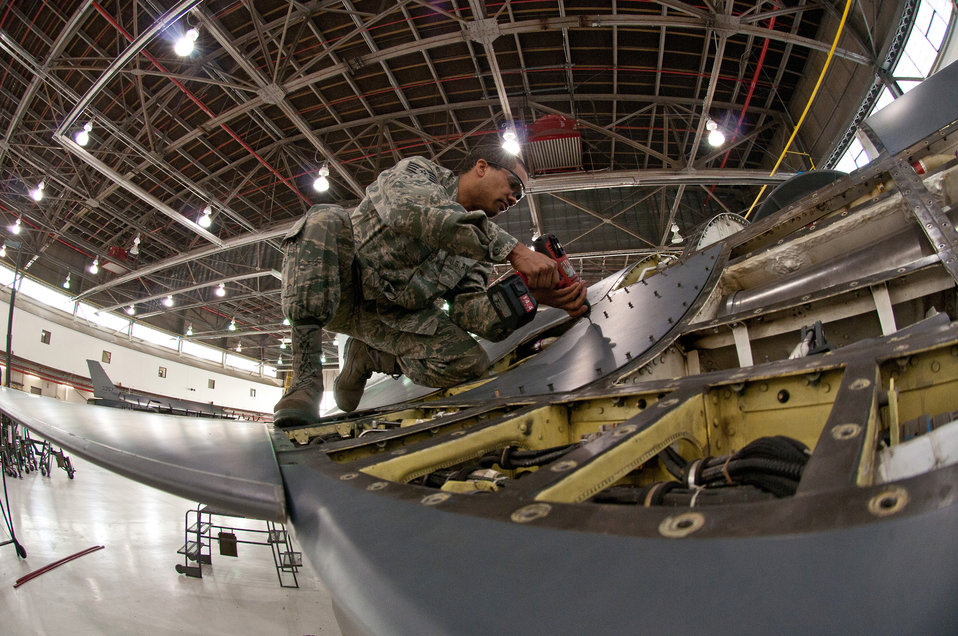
Nuts and bolts

Staff Sgt. Ebon Mitchell attaches body panels to an F-16 Fighting Falcon that is currently in its 300-hour phase inspection Jan. 8, 2011, at Joint Base Andrews, Md. Sergeant Mitchell is a member of the District of Columbia Air National Guard's 113th Maintenance Group.